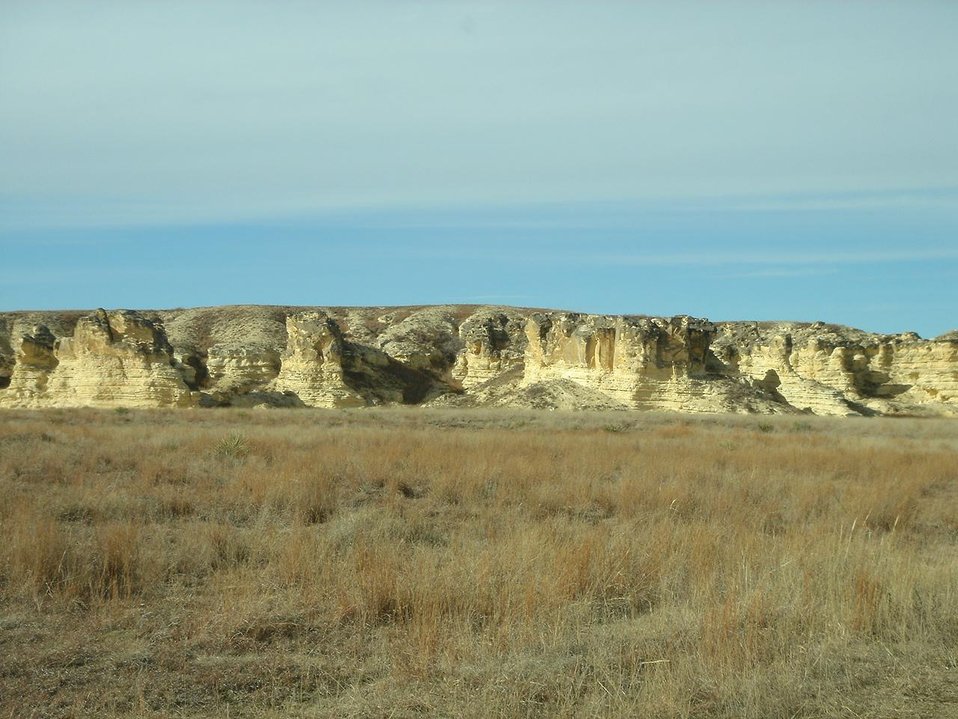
badlands near Castle Rock
Category:Images of Kansas